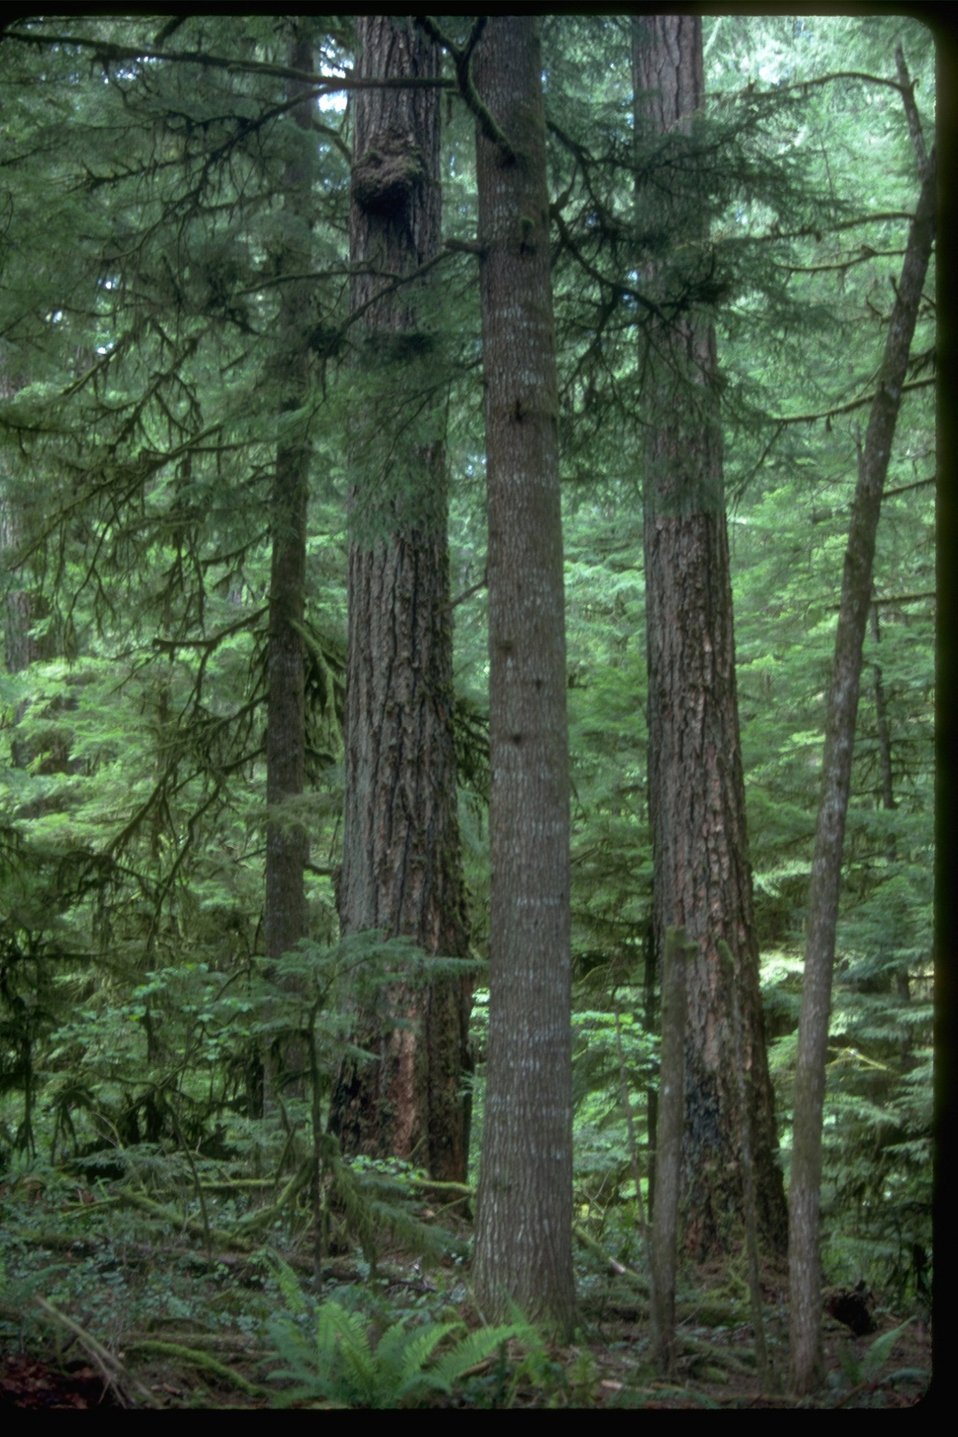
A forest scene of Old Growth.